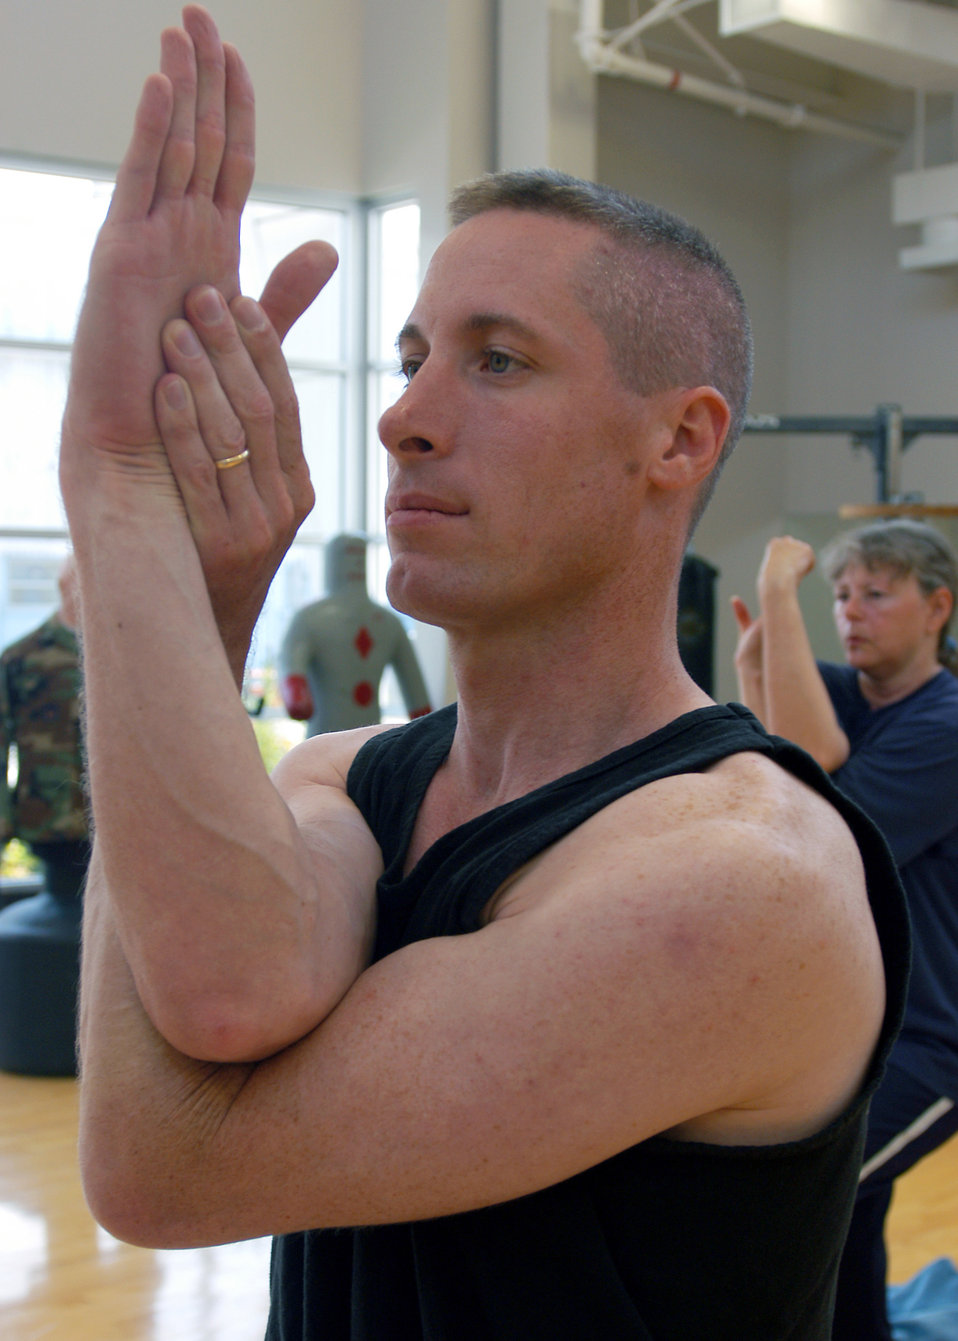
Yoga practice

LOS ANGELES AIR FORCE BASE, Calif. -- For core-muscle strengthening, Capt. William Uhl maintains this eagle pose using abdominal and back muscles which are key to balance. He has been practicing yoga for four years and is certified to teach yoga, Pilates and Power Stretch, which combines yoga and Pilates. The captain is an analyst for the Space and Missile Systems Center's intelligence directorate.